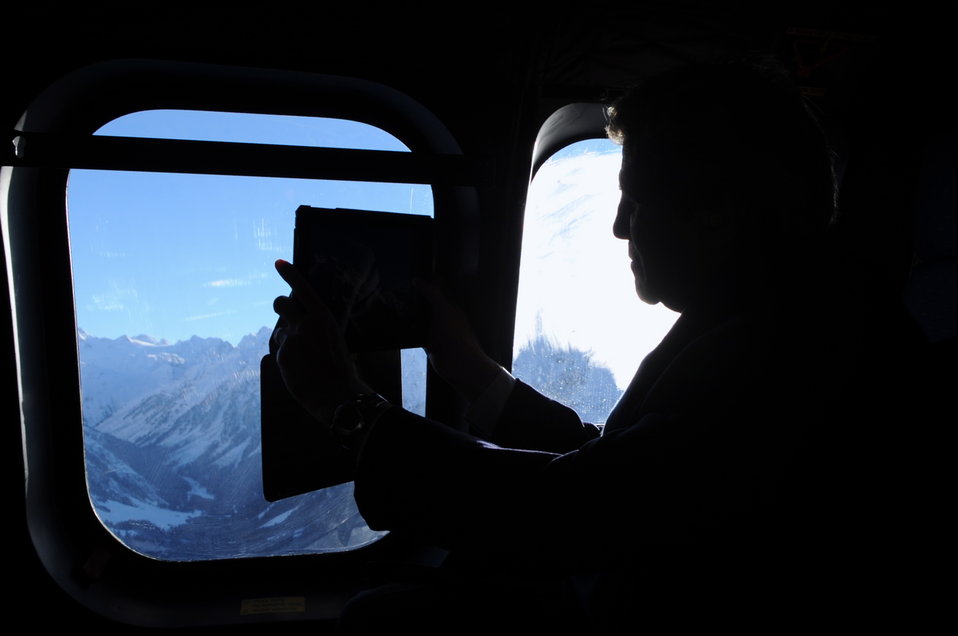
Secretary Kerry Getting a Shot of the Alps

U.S. Secretary of State John Kerry, seen in silhouette, photographs part of the Alps as a helicopter carrying him flies between Davos, Switzerland, and Zurich on Jan. 25, 2014.[State Dept. Photo/Public Domain]